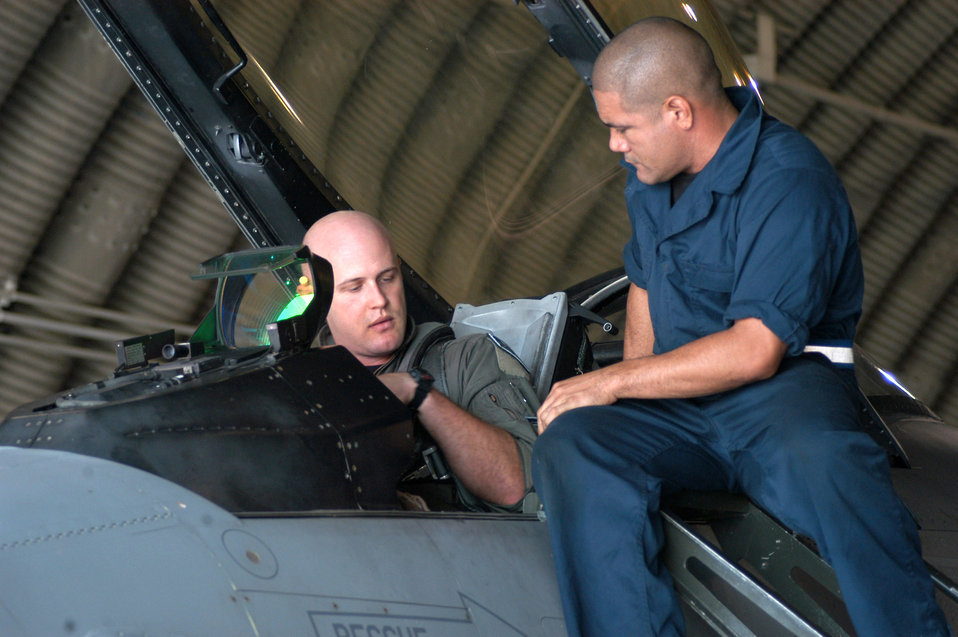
Wolf Pack member receives Distinguished Flying Cross

Capt. Dave Anderson and Staff Sgt. Tim Silva do a pre-flight inspection Sept 10 at Kunsan Air Base, South Korea. Captain Anderson recently received the Distinguished flying cross for his actions in support of Operation Iraqi Freedom. Captain Anderson is a flight commander for the 35th Fighter Squadron and Sergeant Silva is a crew chief for the 35th Aircraft Maintenance Unit.